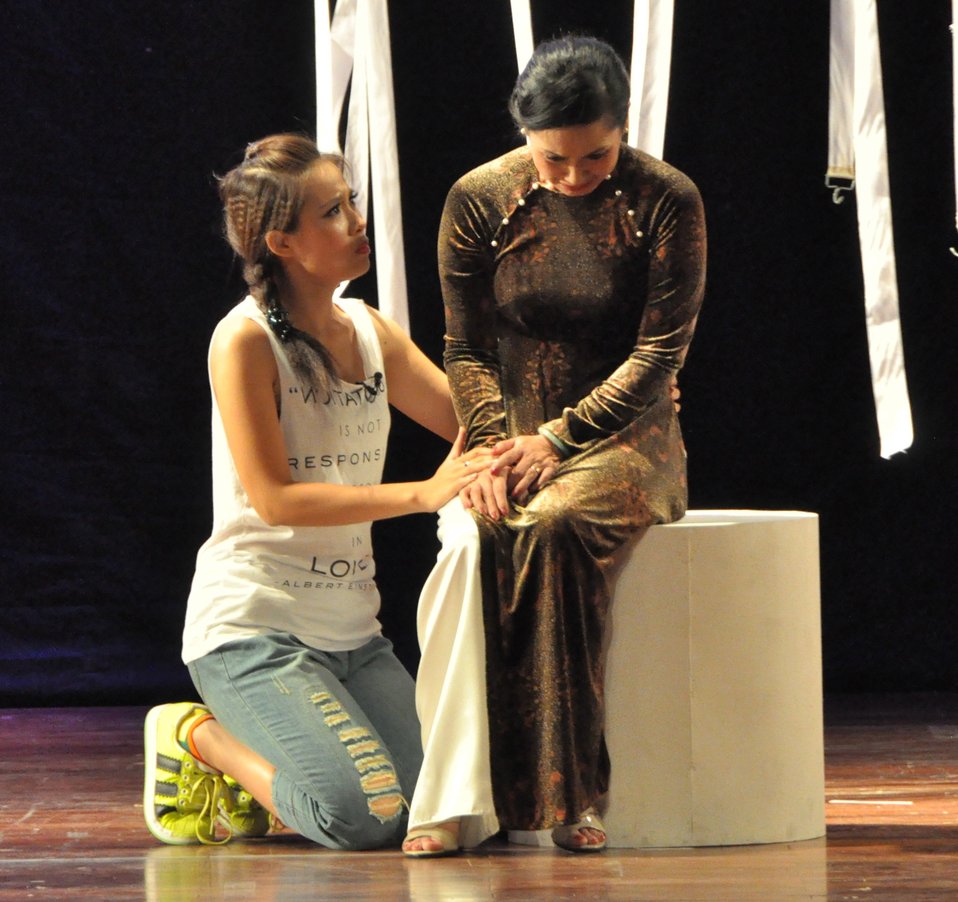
PEPFAR Musical Questions and Exclamations

Hanoi, May 17, 2013